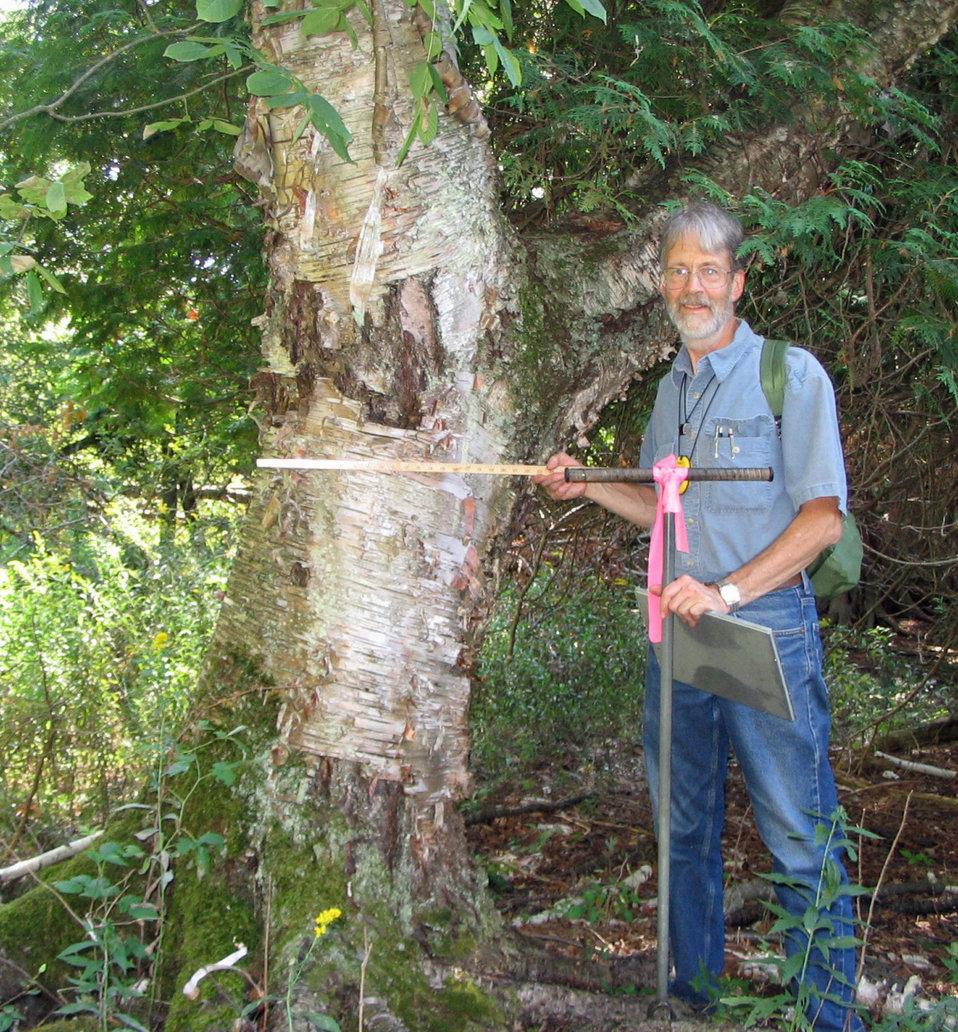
Rutledge-a

Paul Rutledge provides scale by standing near a large Yellow Birch found on the Trapp Farm Nature Preserve Wetland Reserve Program project in Benzie County, MI.